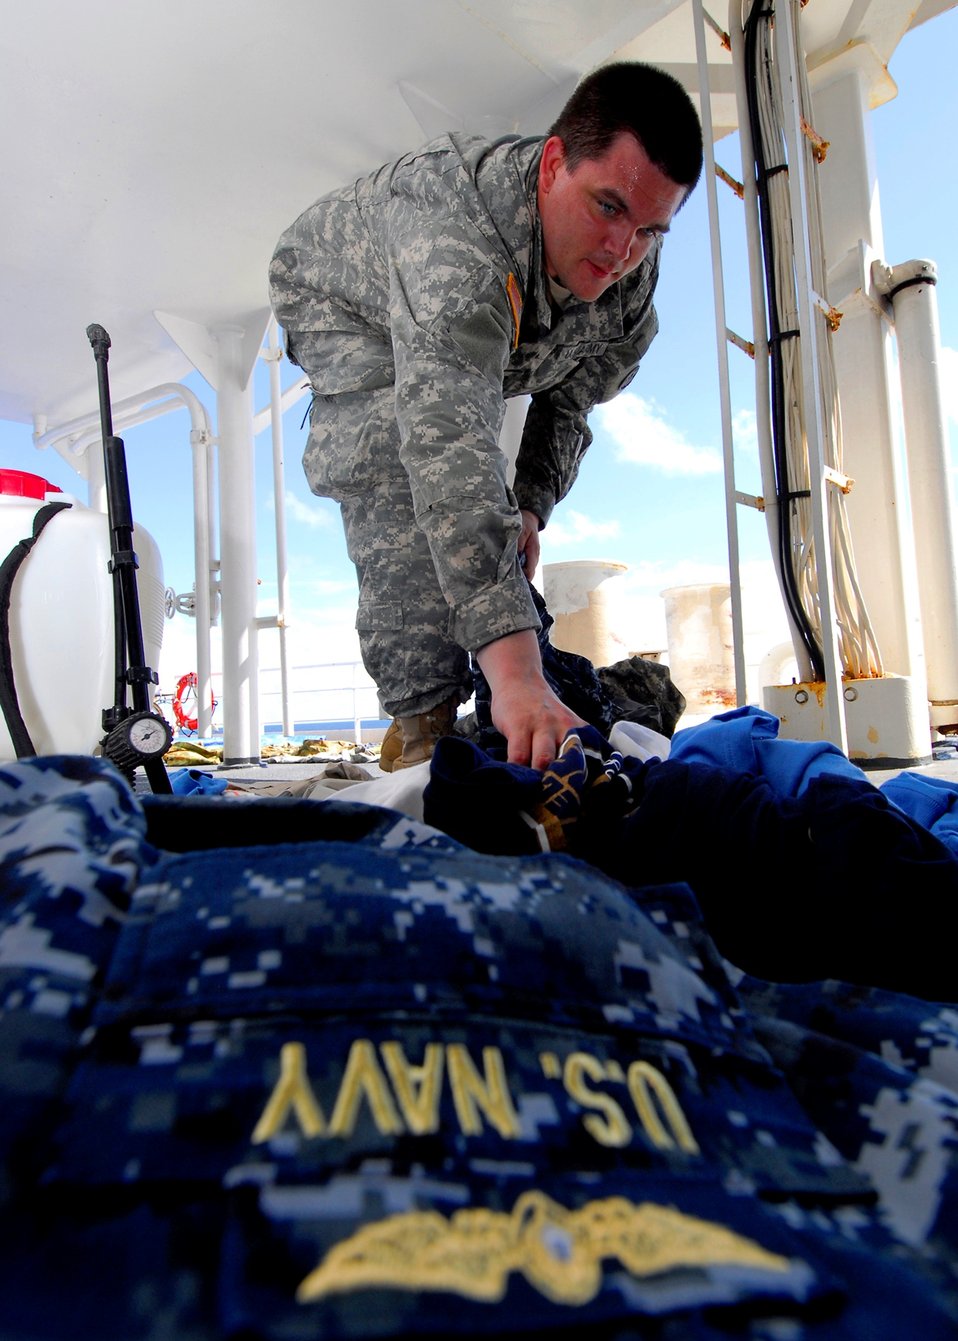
Army Specialist James Wood sprays service working uniforms and clothing with permethrin, a chemical used to repel insects, on the fantail of the Military Sealift Command hospital ship USNS Mercy (T-AH 19) while transiting the Java Sea on July 8, 2010, during Pacific Partnership 2010, the fifth in a series of annual U.S. Pacific Fleet humanitarian and civic assistance endeavors to strengthen regional partnerships.